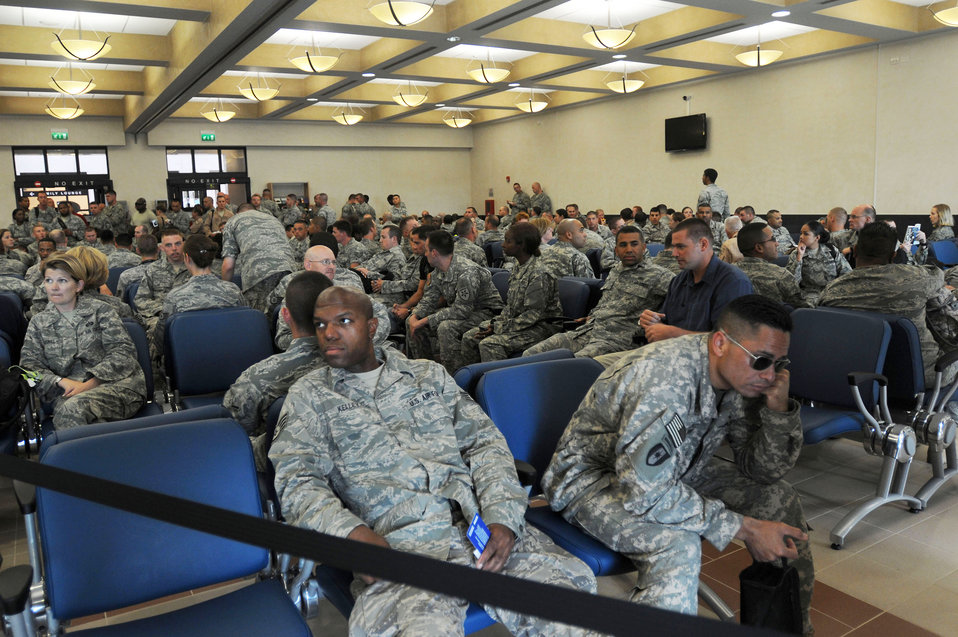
Aviano Airmen open doors to new NATO terminal

Military servicemembers returning from deployment sit inside the gate area of the 724th Air Mobility Squadron's new passenger and air freight terminal while the military chartered aircraft carrying them home is serviced Sept. 11, 2009, at Aviano Air Base, Italy. Passenger service agents from the 724th AMS began processing passengers through the new facility Sept. 10. Volunteers supporting Operation Yellow Ribbon provide snacks and other goodies to servicemembers transiting through the terminal.